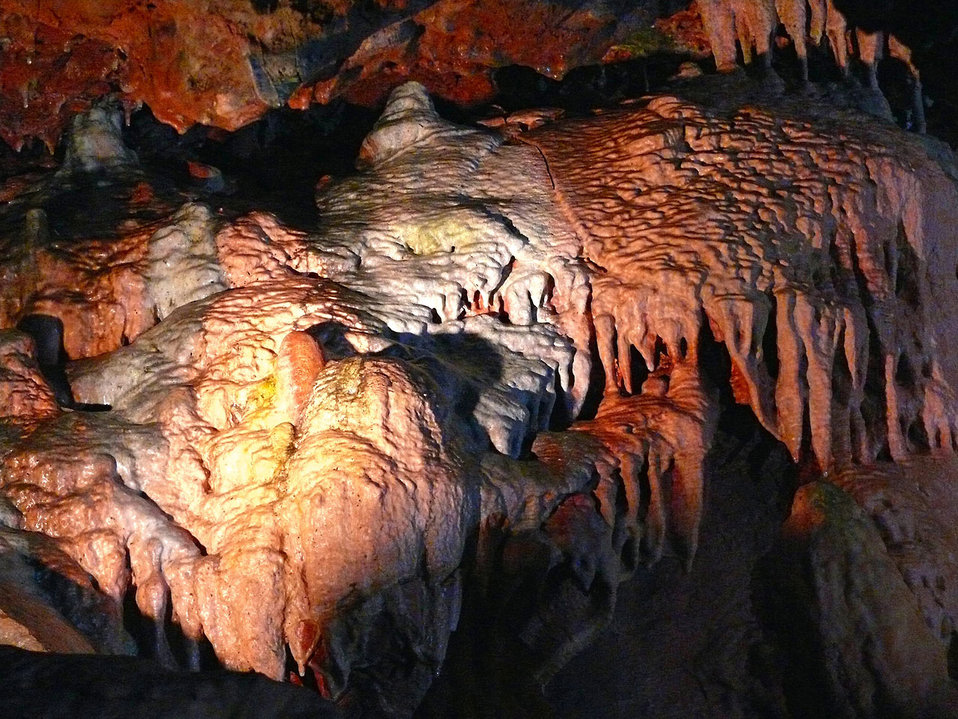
Kents cavern

Cave in torquay.